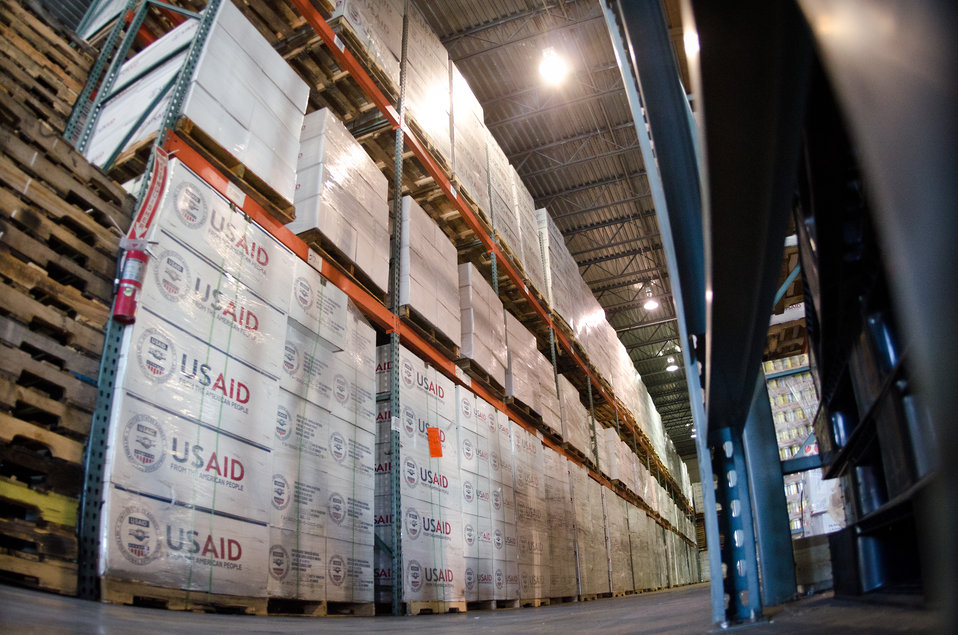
Crowley Logistics in Miami, FL on Friday, August 26, 2011 is one of three U.S. Agency for International Development (USAID) shipping and logistics facilities in the nation. In times of emergency humanitarian relief aid, they can respond with supplies delivered to aircraft at Miami International Airport within two hours. They utilize articulating forklifts, which hinge in the middle to store and retrieve pallets of supplies through narrow aisle ways. This allows for a higher density of stored supplies in the warehouse. Pallets of supplies are stacked three levels high. USAID provides humanitarian assistance through the Office of U.S. Foreign Disaster Assistance (OFDA). OFDA is the lead U.S. Government (USG) office charged with providing and coordinating USG humanitarian assistance in response to international emergencies and disasters. To achieve this, USAID works in cooperation with other USG offices such as the U.S. Department of Agriculture (USDA), and international humanitarian experts. The USDA provides food assistance to support emergency feeding programs in countries experiencing food shortages due to drought and civil conflict.